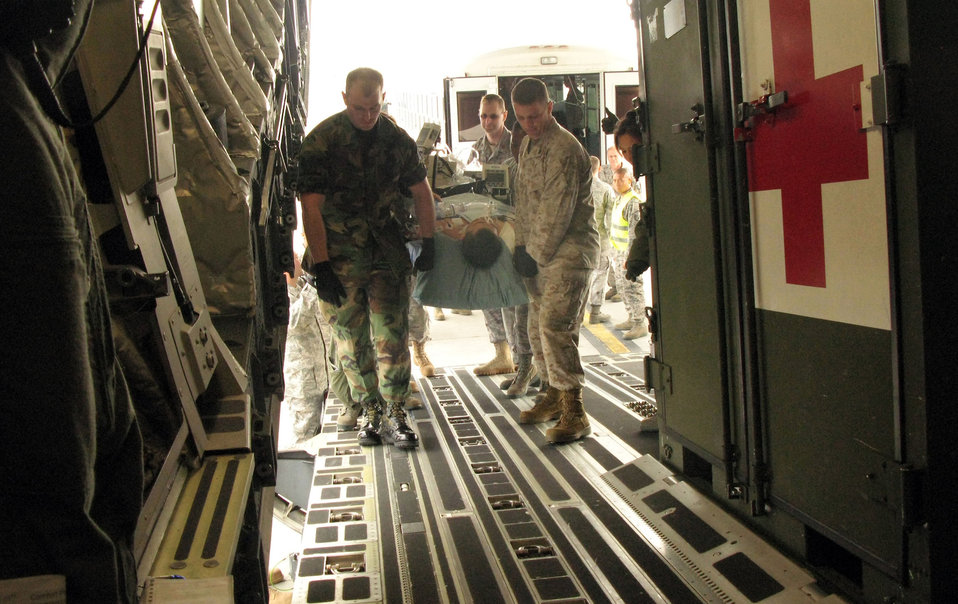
AE Afghanistan

Aeromedical evacuation team members and volunteers at Ramstein Air Base, Germany, carry a patient being transferred from Landstuhl Regional Medical Center for a C-17 Globemaster III flight April 29, 2011, to Joint Base Andrews, Md., to receive care at Walter Reed Army Medical Center in Washington, D.C.